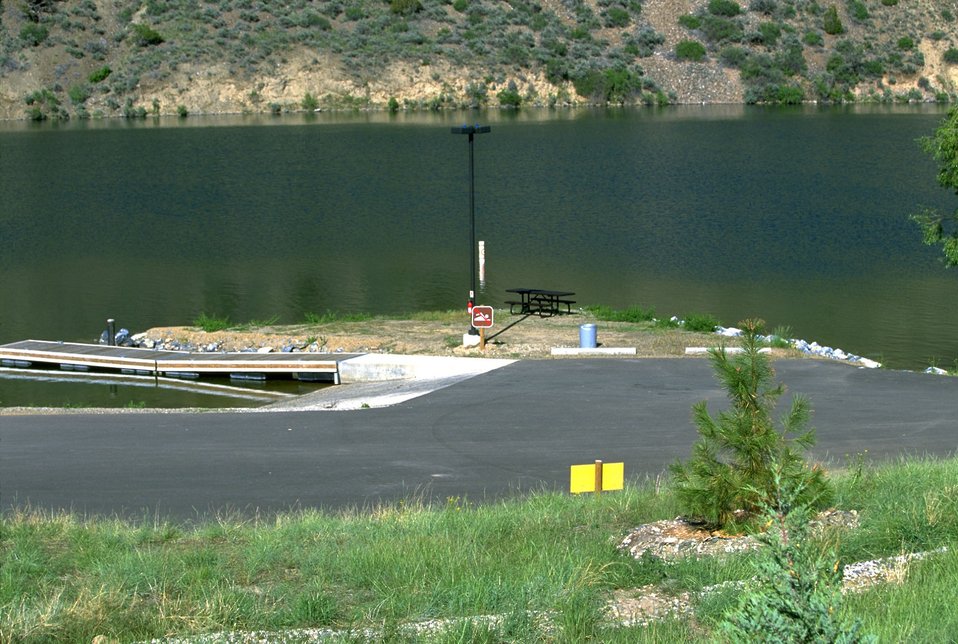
Boat ramp into Hauser Lake at Devils Elbow Campground